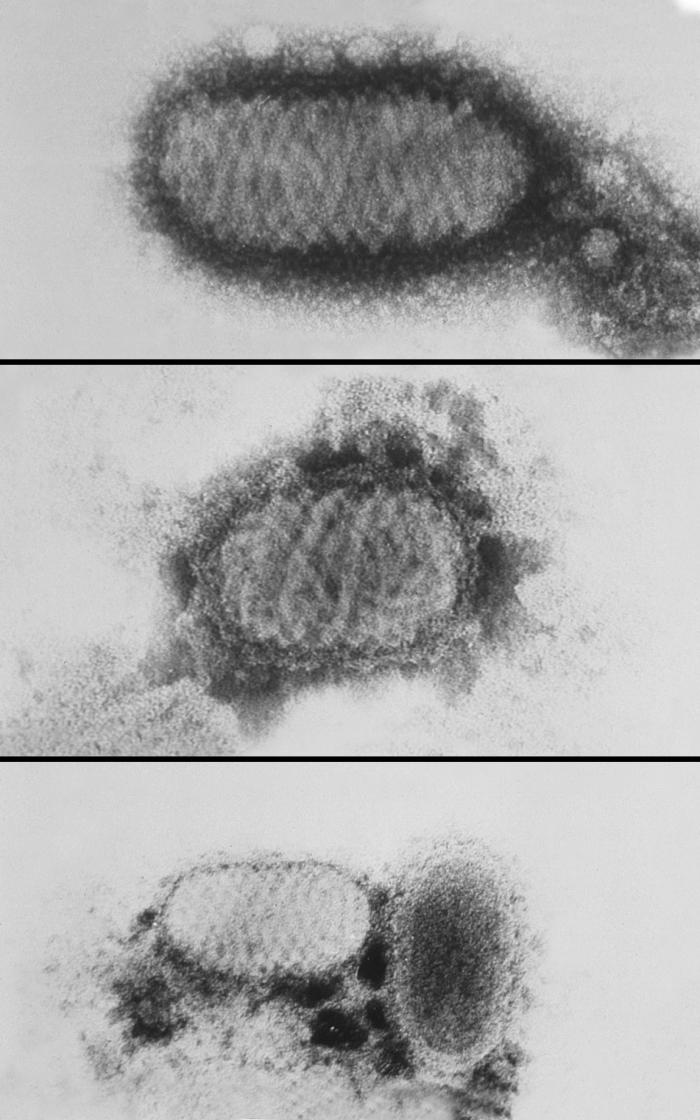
This electron micrograph depicts a number of morphologic variants found in the parapox Orf virus common to sheep and goats.